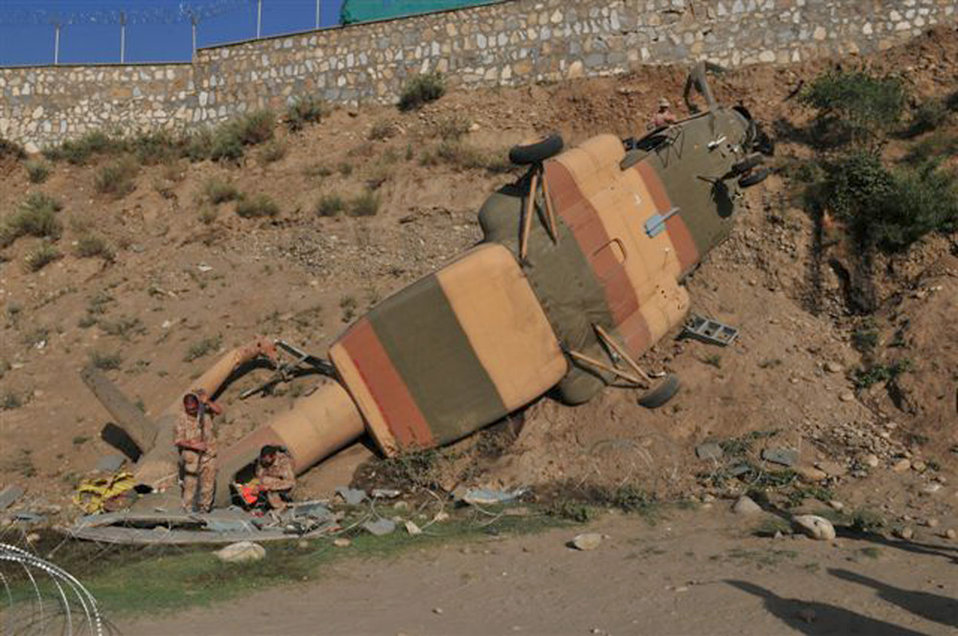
AAF Mi 17 crash

Afghan National Army medical personnel, U.S. Soldiers and 438th Air Expeditionary Wing Airmen arrived at the site of an Afghan Air Force Mi-17 helicopter crash in Kunar province Afghanistan. Upon arrival, teams assessed security, treated injuries and began the process of recovering the aircraft. An AAF safety investigation board has been conveyed to determine the cause of the crash.